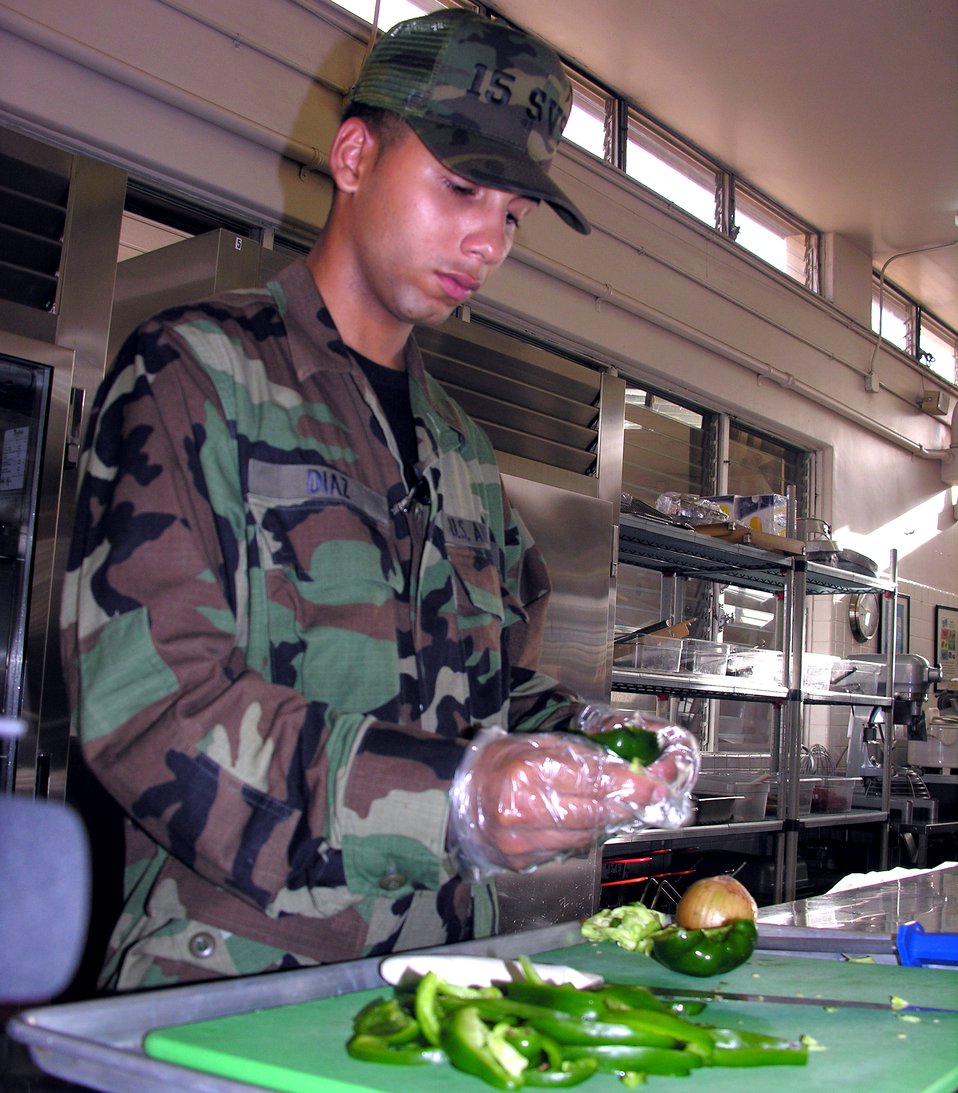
Serving through the season: Airman Basic Alex Diaz

Airman Basic Alex Diaz takes the seeds out of bell peppers at the Hale' Aina Dining Facility at Hickam Air Force Base, Hawaii.